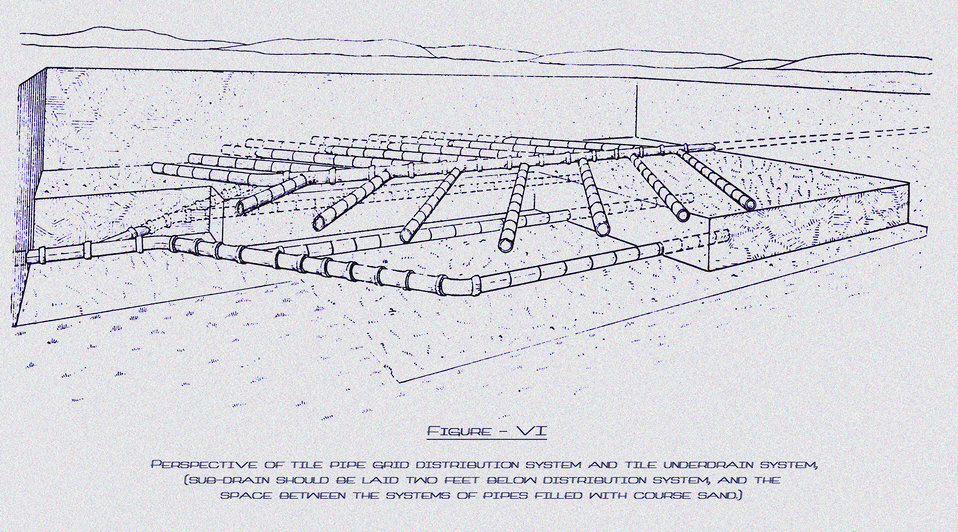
This historic diagram, which had been digitally enhanced and colorized, depicted one method of sewage disposal for farm homes. From this oblique perspective, one could better appreciate the outlines of the tiled pipe-grid distribution system, and its accompanying tiled under-drain system. Published in 1914, this was one of a series of instructional drawings used by the Minnesota Board of Health to train state public health workers.